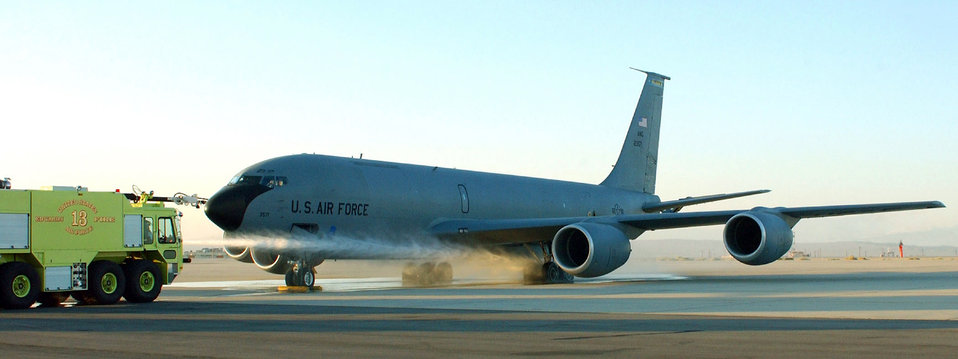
Carbon brake tests increase tanker's capabilities

EDWARDS AIR FORCE BASE, Calif. -- Firefighters from the Air Force Flight Test Center Fire Department here spray down KC-135 Stratotanker tires after a carbon brake test. Testing determined that carbon brakes performed more efficiently and gave the aircraft increased operational capability over steel brakes that currently equip the aircraft.